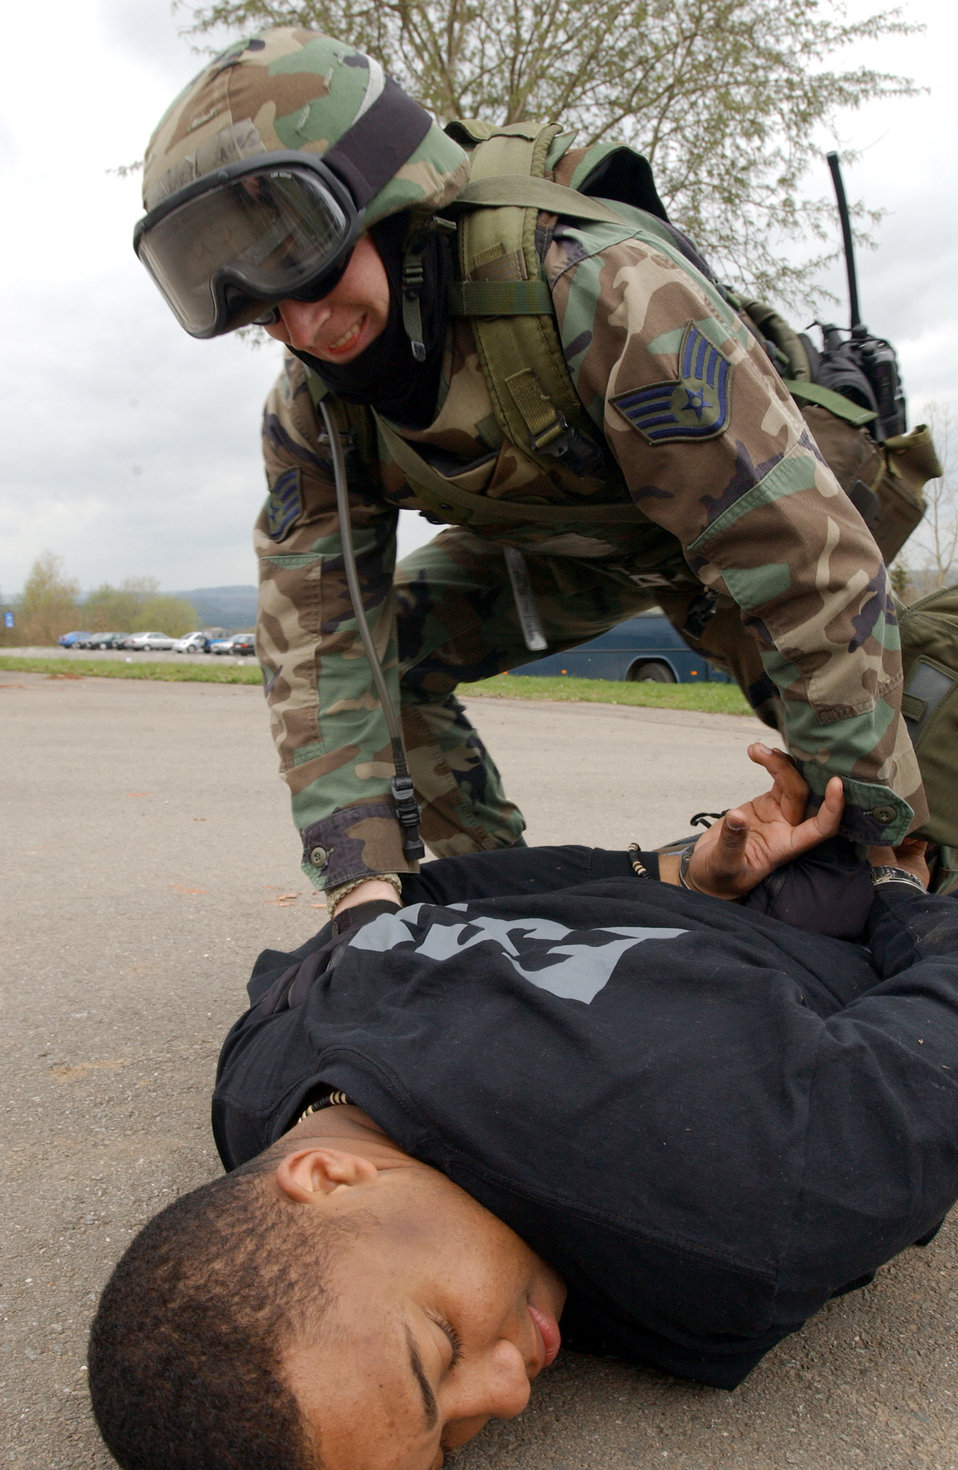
Down and out

SPANGDAHLEM AIR BASE, Germany -- Staff Sgt. Travis Humphries places handcuffs on suspected bombing accomplice, Staff Sgt. Timothy Stewart, at the entry control point here April 20 during exercise Harley Saber. Sergeants Humphries and Stewart are security forces Airmen with the 52nd Security Forces Squadron.